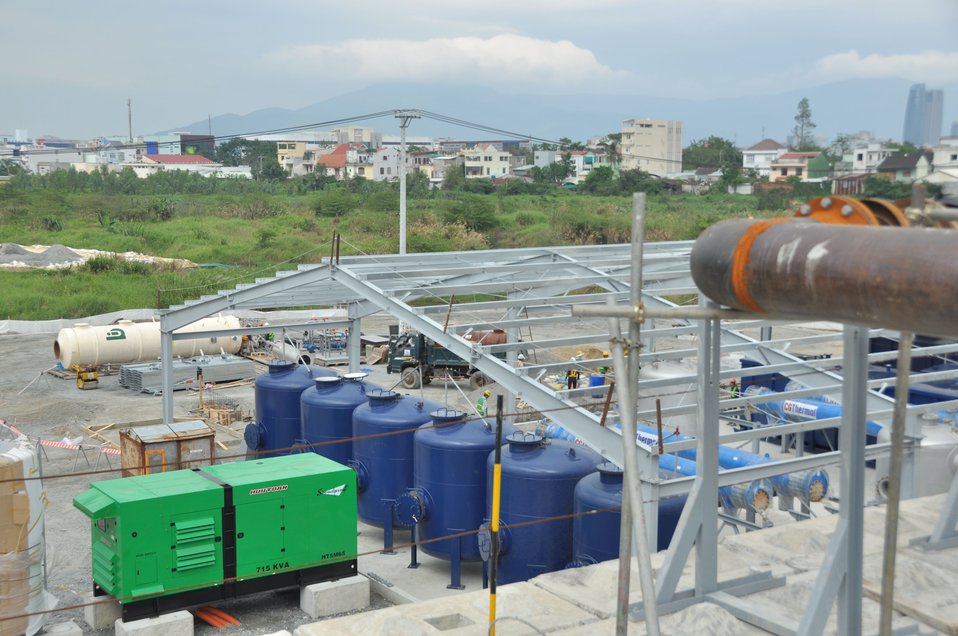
USAID Dioxin Contamination Project Progress: Water Treatment System

Progress at the Environmental Remediation of Dioxin Contamination Project at the Danang Airport

December 4, 2013